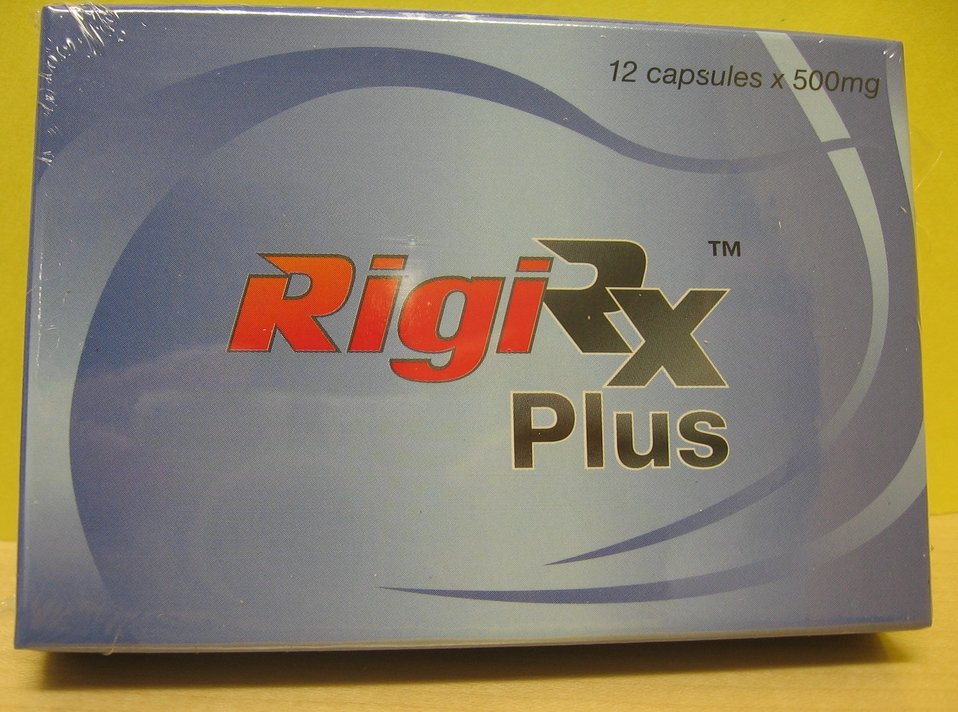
RigiRx Plus

April 20, 2012 - The FDA is advising consumers not to purchase or use 'RigiRx Plus,' a product promoted and sold for sexual enhancement. The product was found to contain undeclared aminotadalafil. For more information, go to www.fda.gov/Drugs/ResourcesForYou/Consumers/BuyingUsingMe....

And read this Consumer Update: Beware of Fraudulent ‘Dietary Supplements’